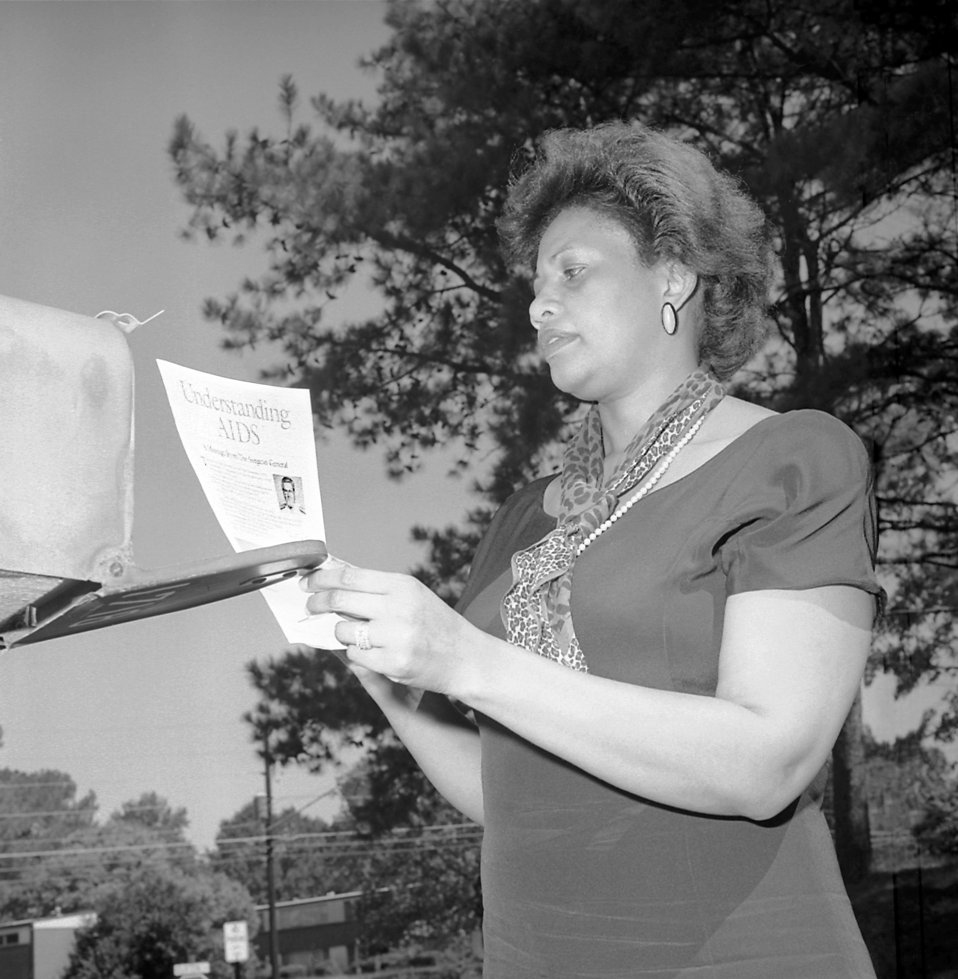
Used in a Public Awareness campaign, this image depicts a person receiving AIDS info in the mail during the late 1980s.